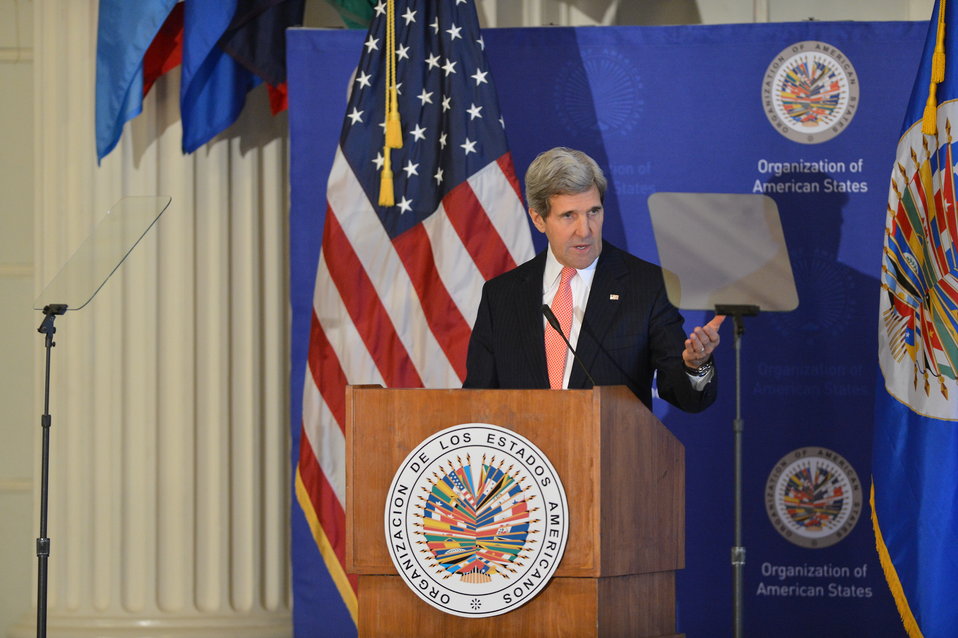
Secretary Kerry Delivers Remarks on U.S. Policy in the Western Hemisphere

U.S. Secretary of State John Kerry delivers remarks on U.S. Policy in the Western Hemisphere at the Organization of American States in Washington, D.C., on November 18, 2013.